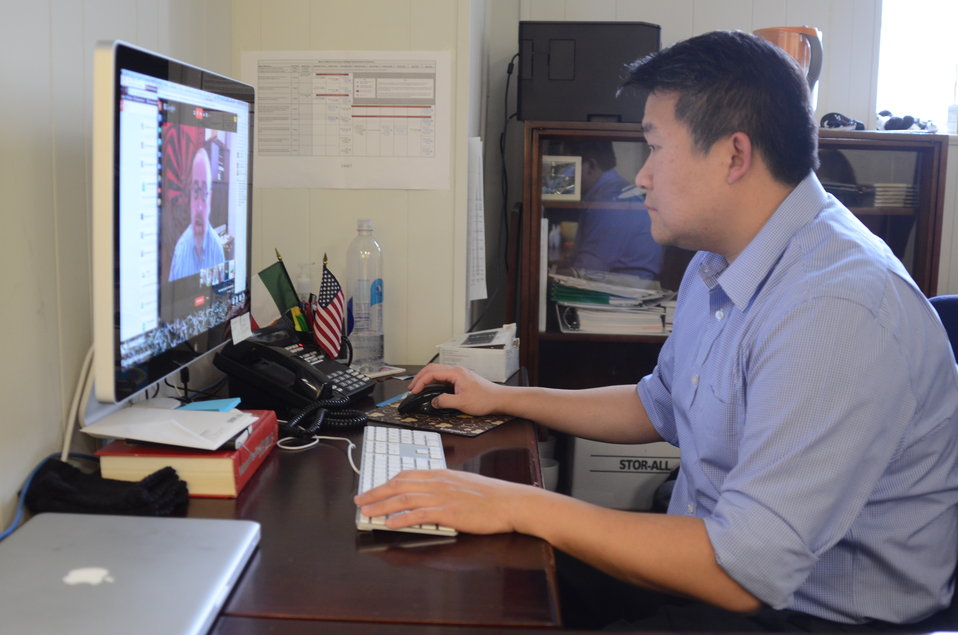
U.S. Department of Agriculture (USDA) Office of Communications (OC) Digital Media Director Peter Rhee monitors USDA’s National Coordinator for Local and Regional Food Systems Elanor Starmer's live Google Hangout to discuss the importance of a comprehensive Food, Farm and Jobs Bill to local and regional food systems at USDA on Thursday, Nov. 21, 2013.